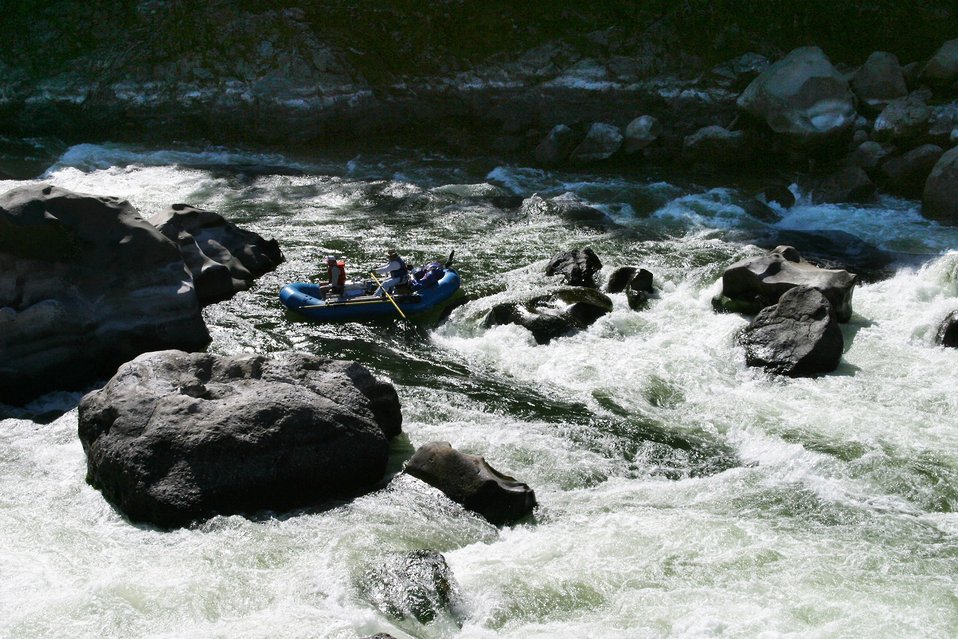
Blossom Rapids.